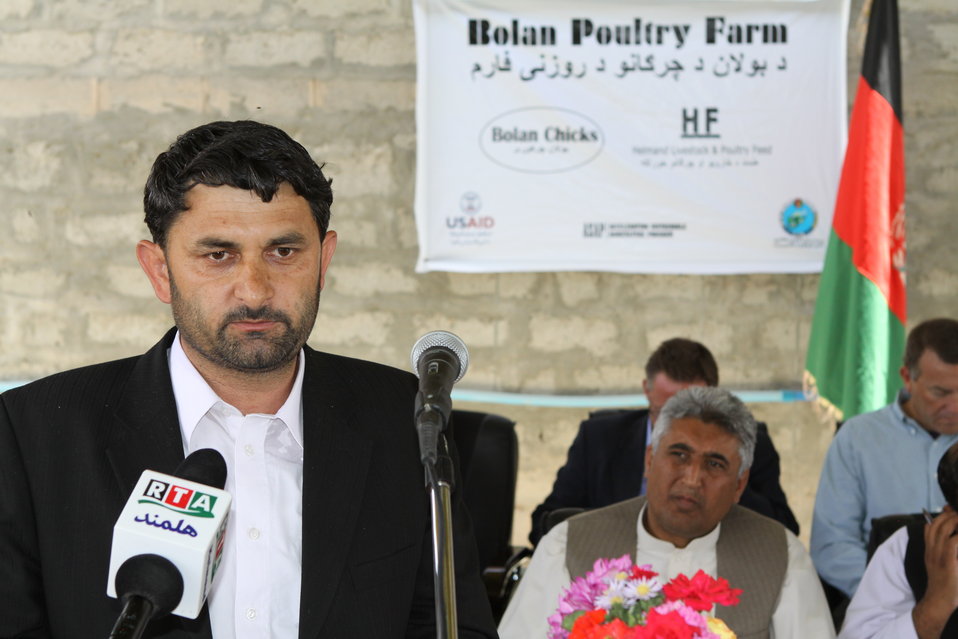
Bolan Poultry Farm